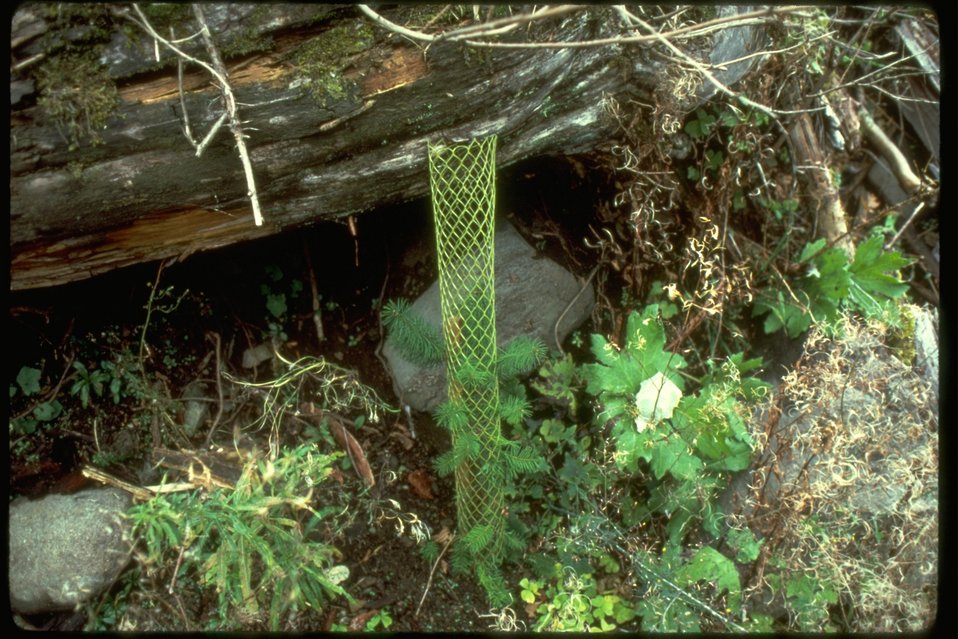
A seedling is pictured as an example of Tubed Seeding.